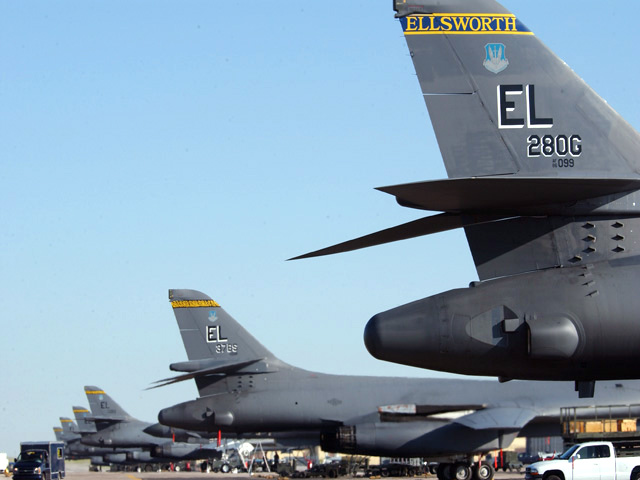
Lancer operations

B-1 Lancers from the 28th Bomb Wing are readied for takeoff on the flightline at Ellsworth Air Force Base, S.D., on Tuesday, June 27. The B-1s are loaded with dummy bombs for an operational readiness exercise.